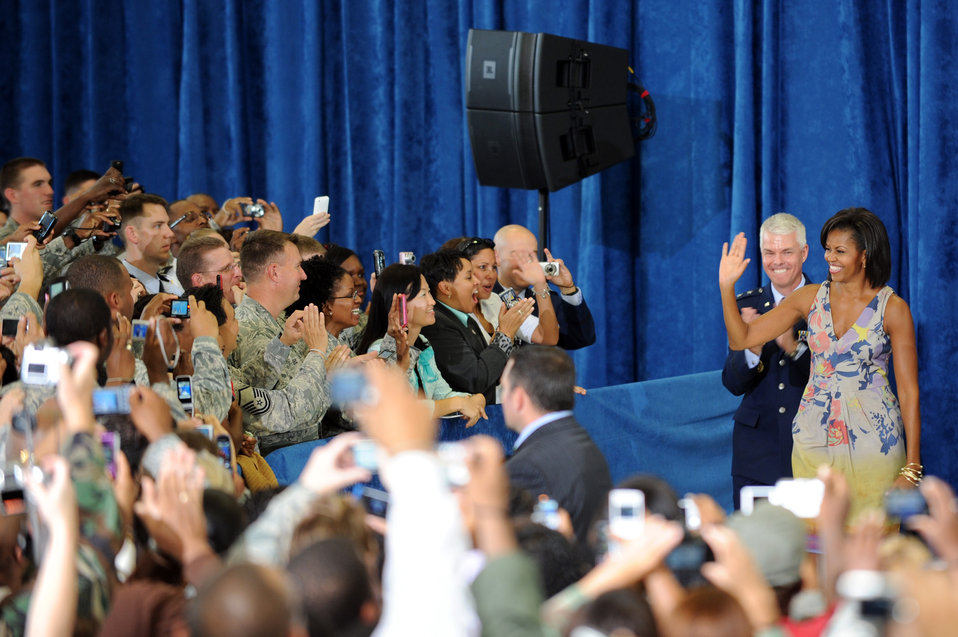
First lady speaks on taking care of military families

First Lady Michelle Obama and Maj. Gen. Charles R. Davis wave to the crowd before the first lady gave a speech on family values during a visit to Eglin Air Force Base, Fla. on Oct. 15. General Davis is the commander of the Air Armament Center at Eglin.